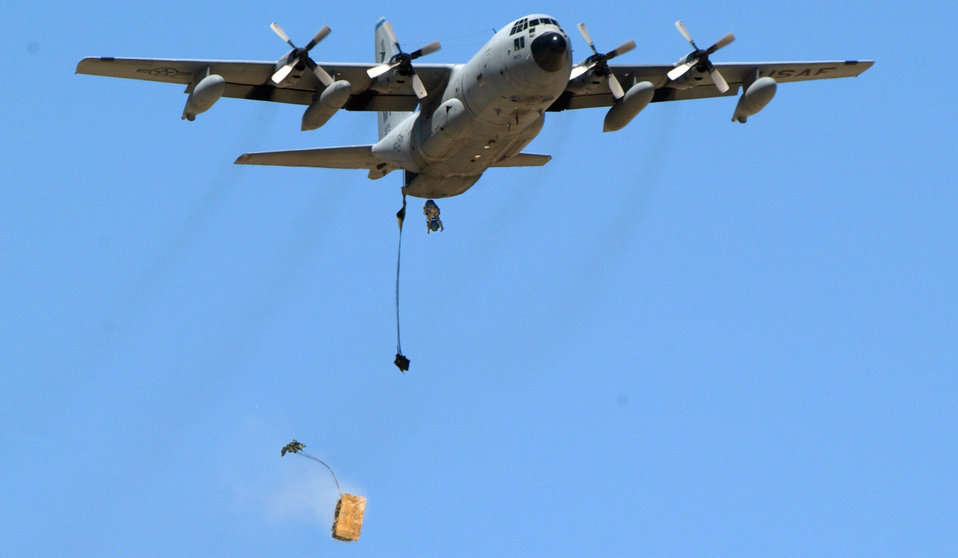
Desert Rescue XI

NAVAL AIR STATION FALLON, Nev. -- An HC 130 from the 71st Rescue Squadron at Moody Air Force Base, Ga., drops pararescuemen and equipment Aug. 11 during a joint-service combat search and rescue exercise here. Desert Rescue XI is a training exercise that simulates downed aircrew behind enemy lines and allows airmen to practice rescue-related missions. They also experiment with new techniques in realistic scenarios.